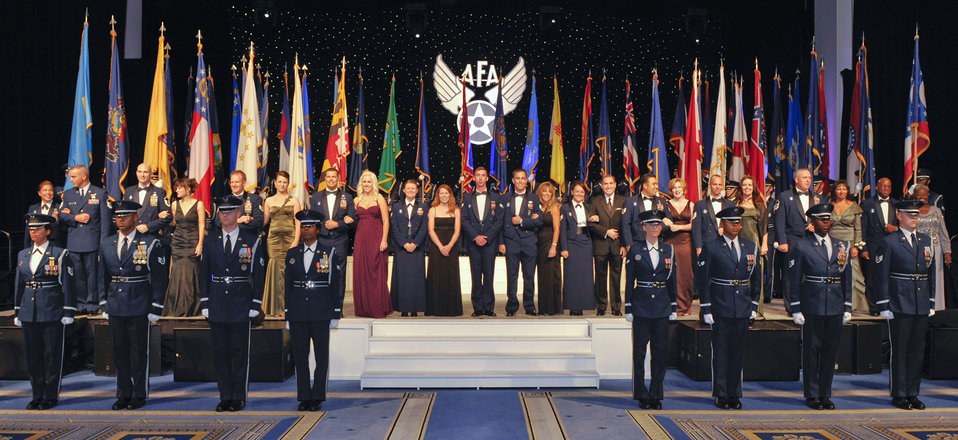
Outstanding Airmen honored at dinner

The Air Force's 12 Outstanding Airmen of the Year are introduced at the Air Force Association's dinner honoring them Sept. 13, 2010, in National Harbor at Oxon Hill, Md. The dinner was one of many events honoring the Airmen during the AFA's Air and Space Conference and Technology Exposition.